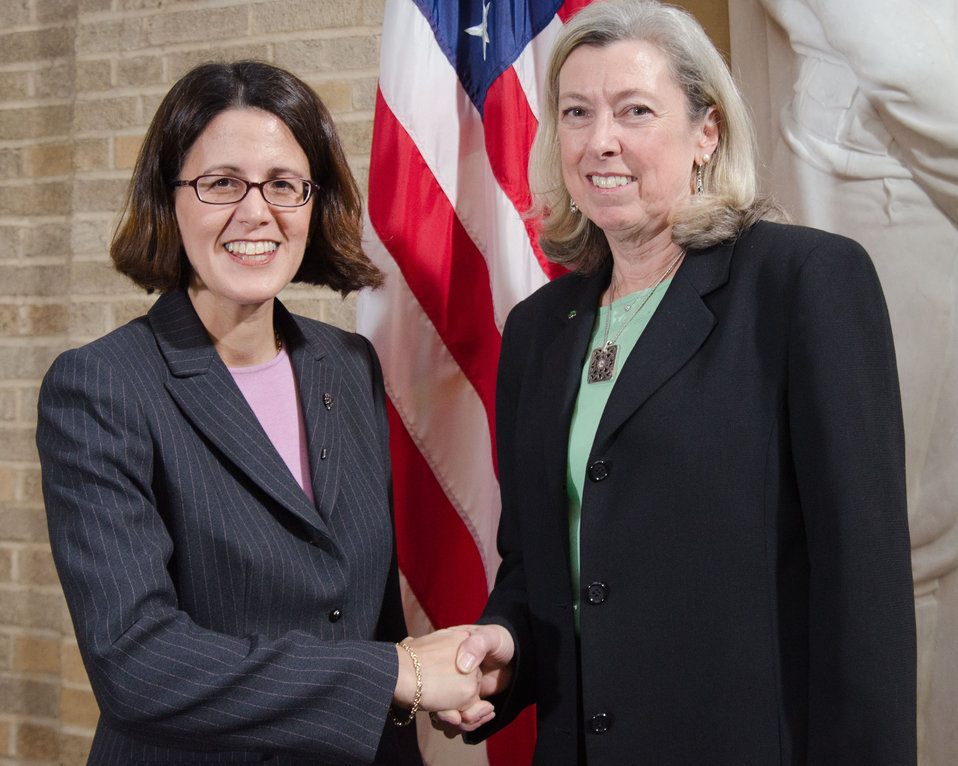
New Foreign Service Officer Sigal Bernstein (left) is congratulated by, Foreign Agriculture Service Acting Administrator Suzanne Heinen, after being sworn in at a ceremony at the U.S. Department of Agriculture in Washington, D.C., on Thursday, March 15, 2012.